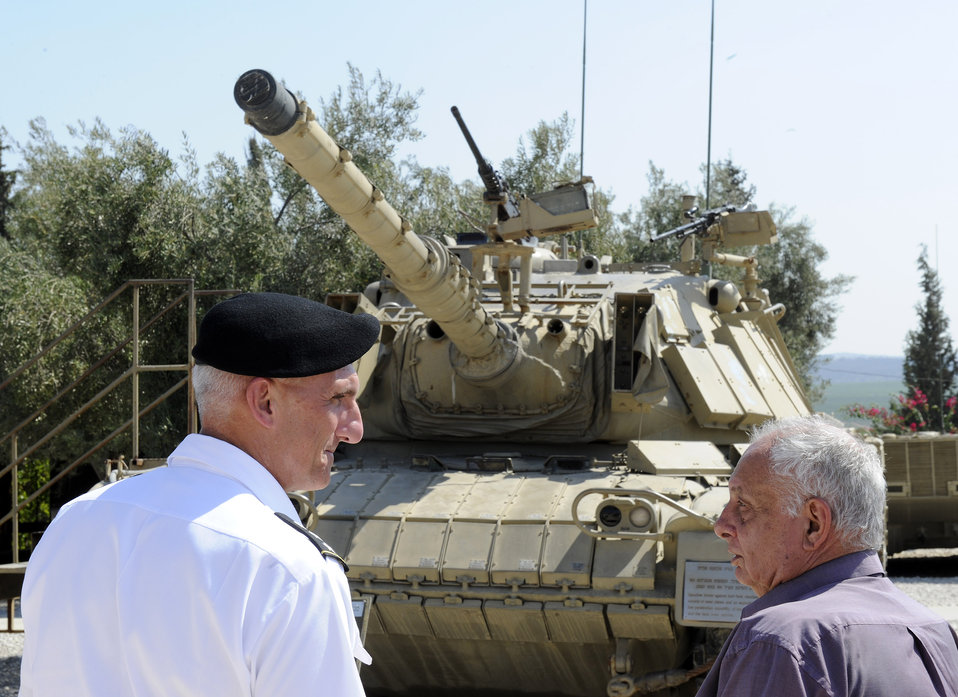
Lieutenant Hertling Tours the Latroun Museum and Grounds in Israel

Lieutenant General Mark P. Hertling, commanding general of the U.S. Army Europe, is guided by Director of the Zvi Meitar Institute for Land Warfare Studies, Gideon Avidor, on a tour of the Latroun Museum and grounds in Latroun, Israel, on August 10, 2011. Lieutenant Hertling met with his Israeli Defense Forces counterpart, Major General Sami Turgeman, to discuss training cooperation between the U.S. and Israeli militaries earlier in the day.